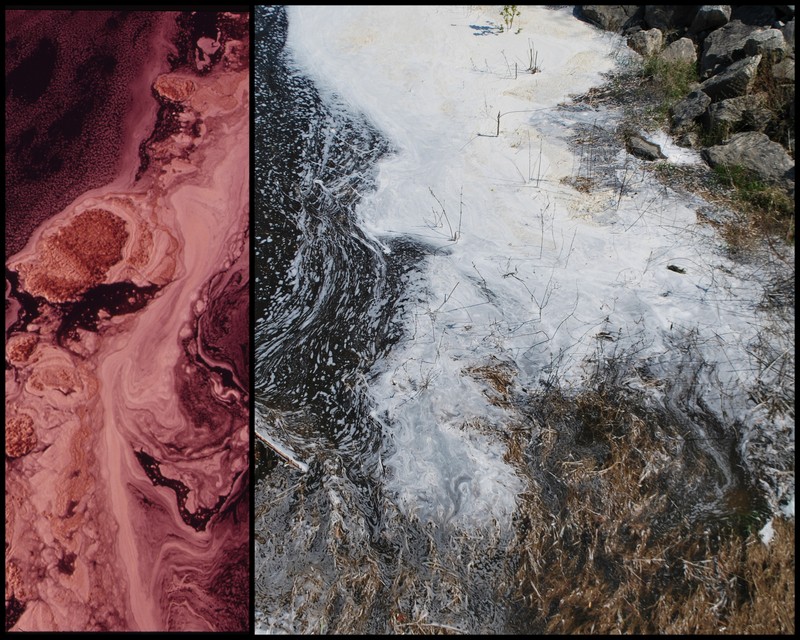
Androscoggin River, 1973 and 2012

'Then' Documerica Photo: June, 1973 Foam on the Polluted Androscoggin River, Seen from the North Bridge at Lewiston, Textile Center and Second Largest City in the State by Charles Steinhacker.

'Now' State of the Environment Photo: October, 2012 Photo by Munroe Graham.

Join in at www.flickr.com/groups/ourenvironment